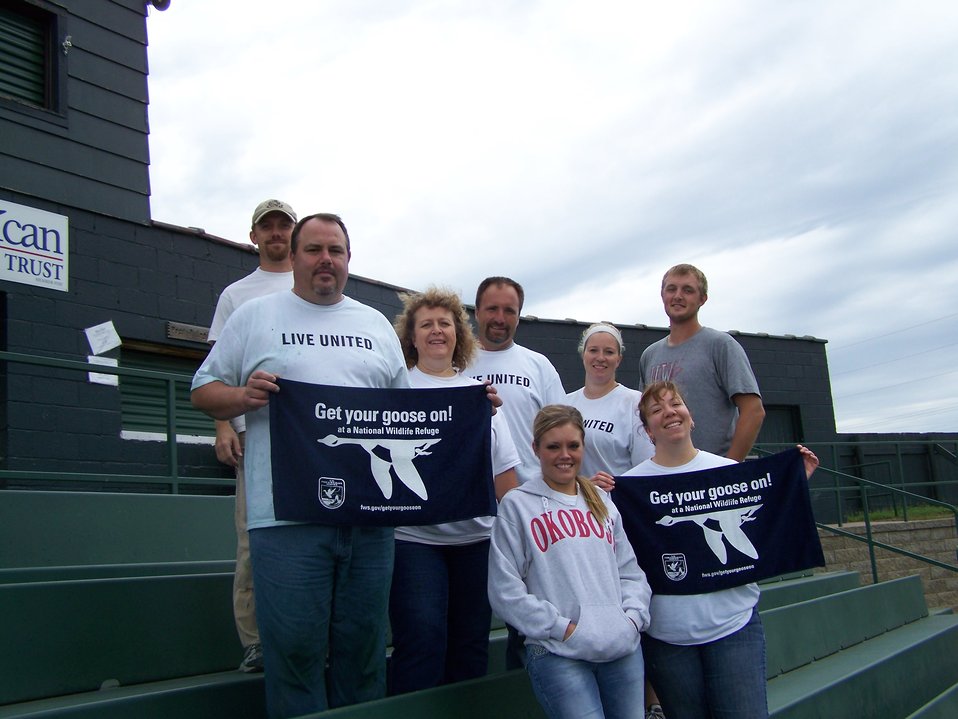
2012 Huron Day of Caring

USFWS staff finishing up on the painting of bleachers of Huron's baseball field.